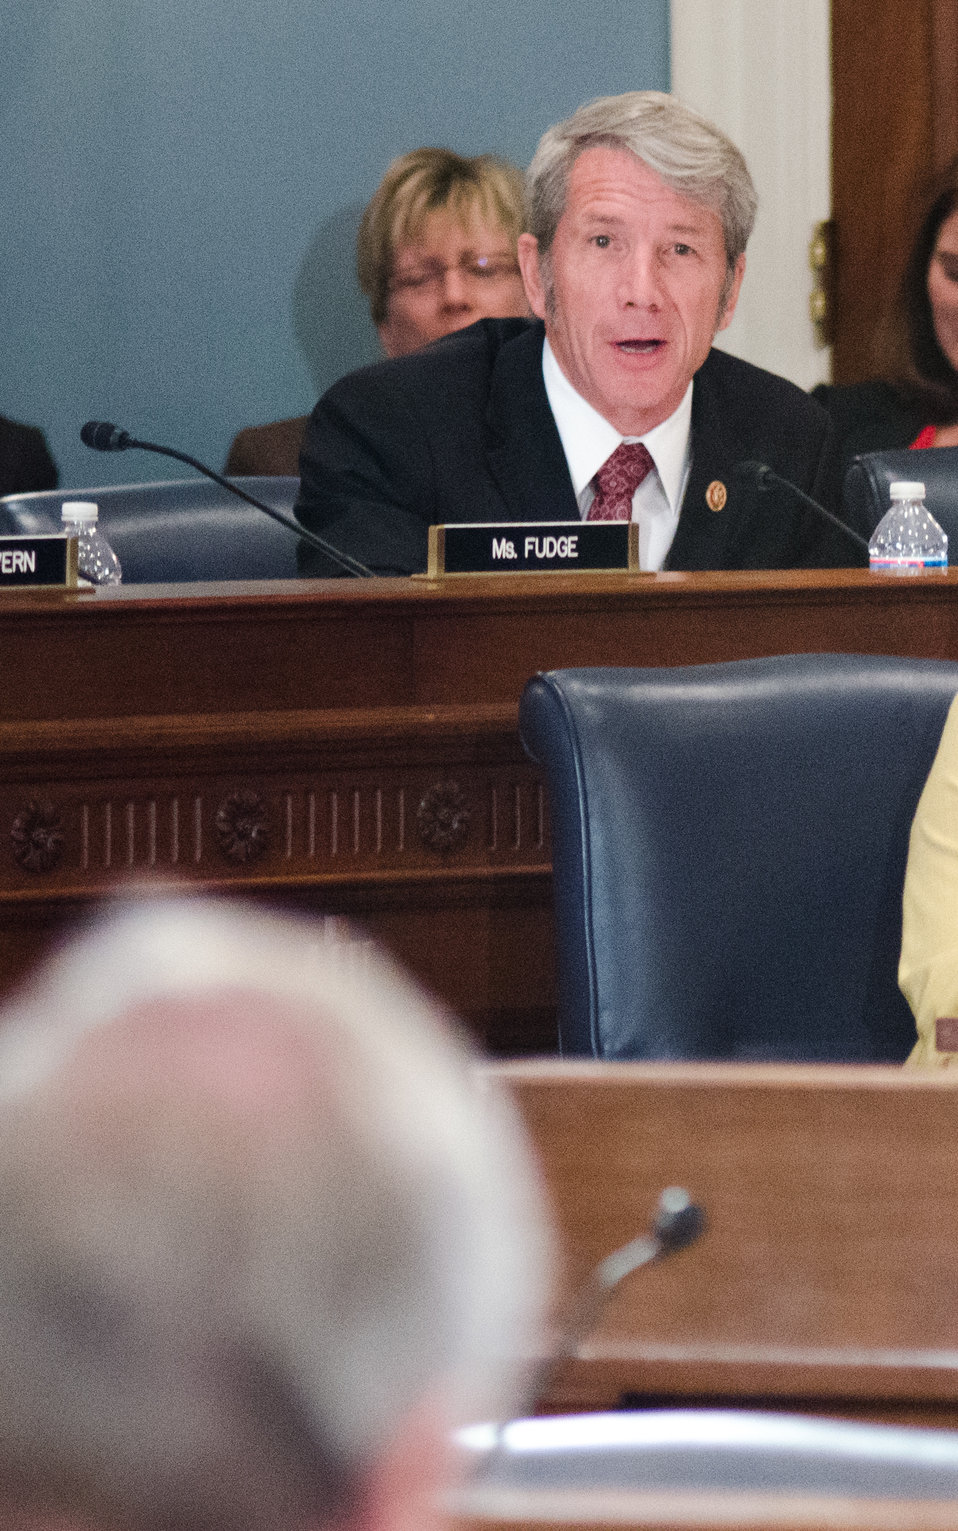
Representative Kurt Schrader (OR) questions Agriculture Secretary Tom Vilsack, at table, during testimony before the House Agriculture Committee regarding the “State of the Rural Economy“ at the Longworth House Office Building in Washington, D.C. on Tuesday, Mar. 5, 2013.